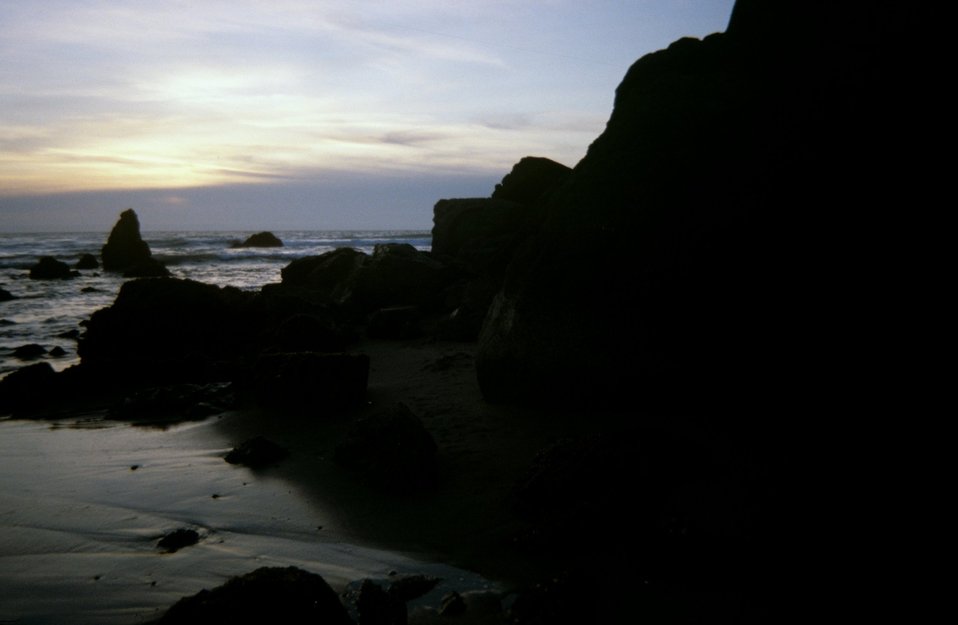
Dillon Beach